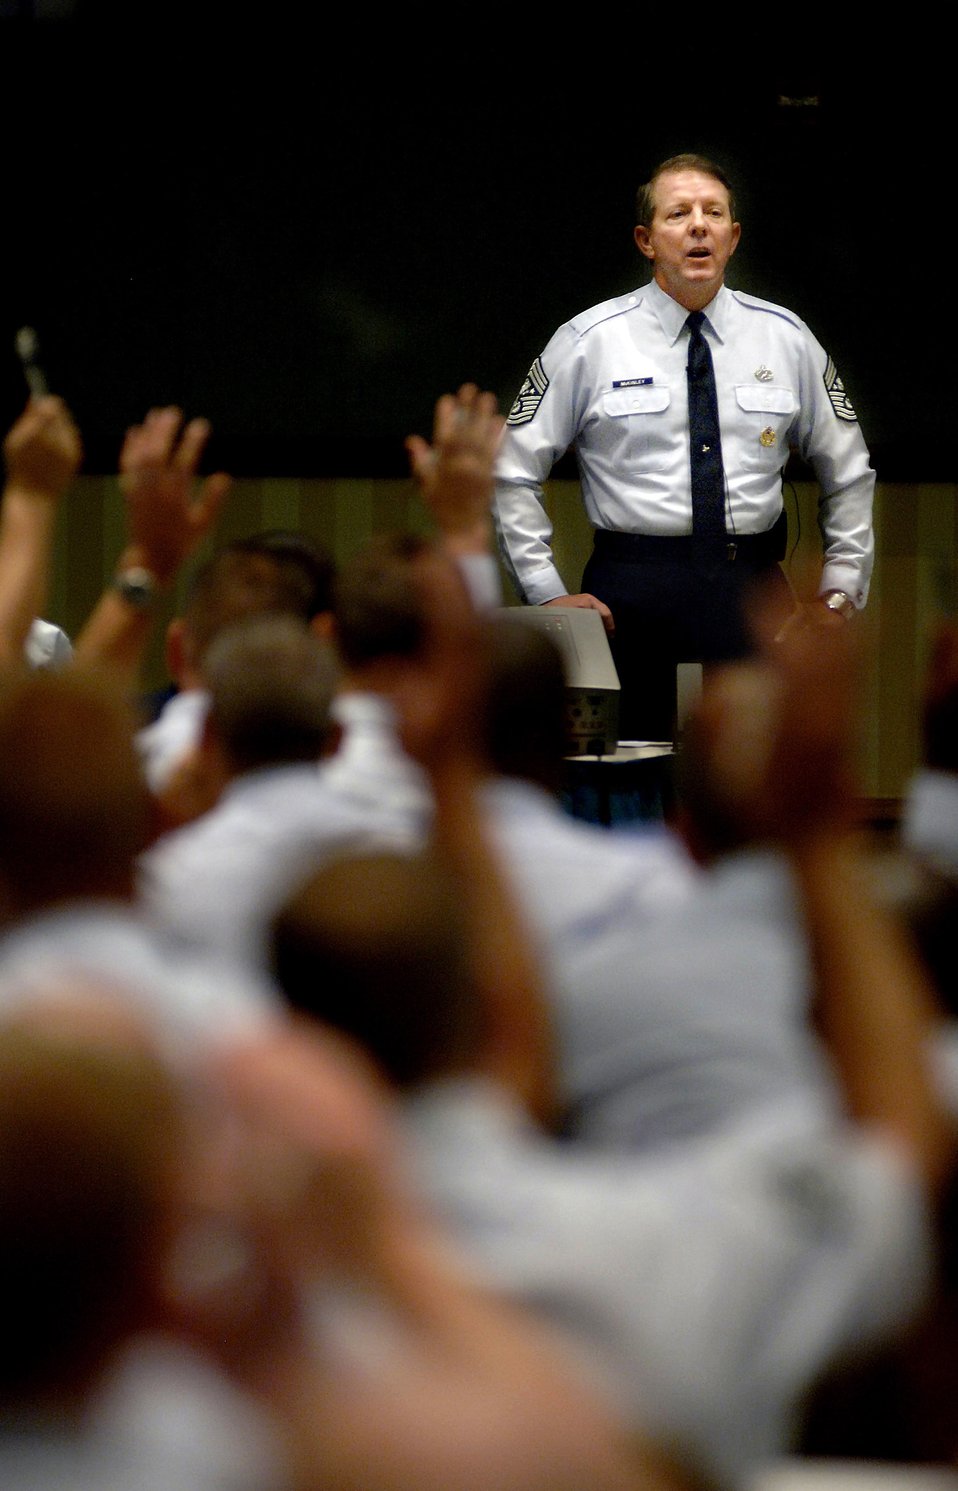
2007 Air Force Sergeants Association Conference

Chief Master Sgt. of the Air Force Rodney J. McKinley briefs Airmen at the 2007 Air Force Sergeants Association Conference held in Orlando, Fla., Aug. 21.